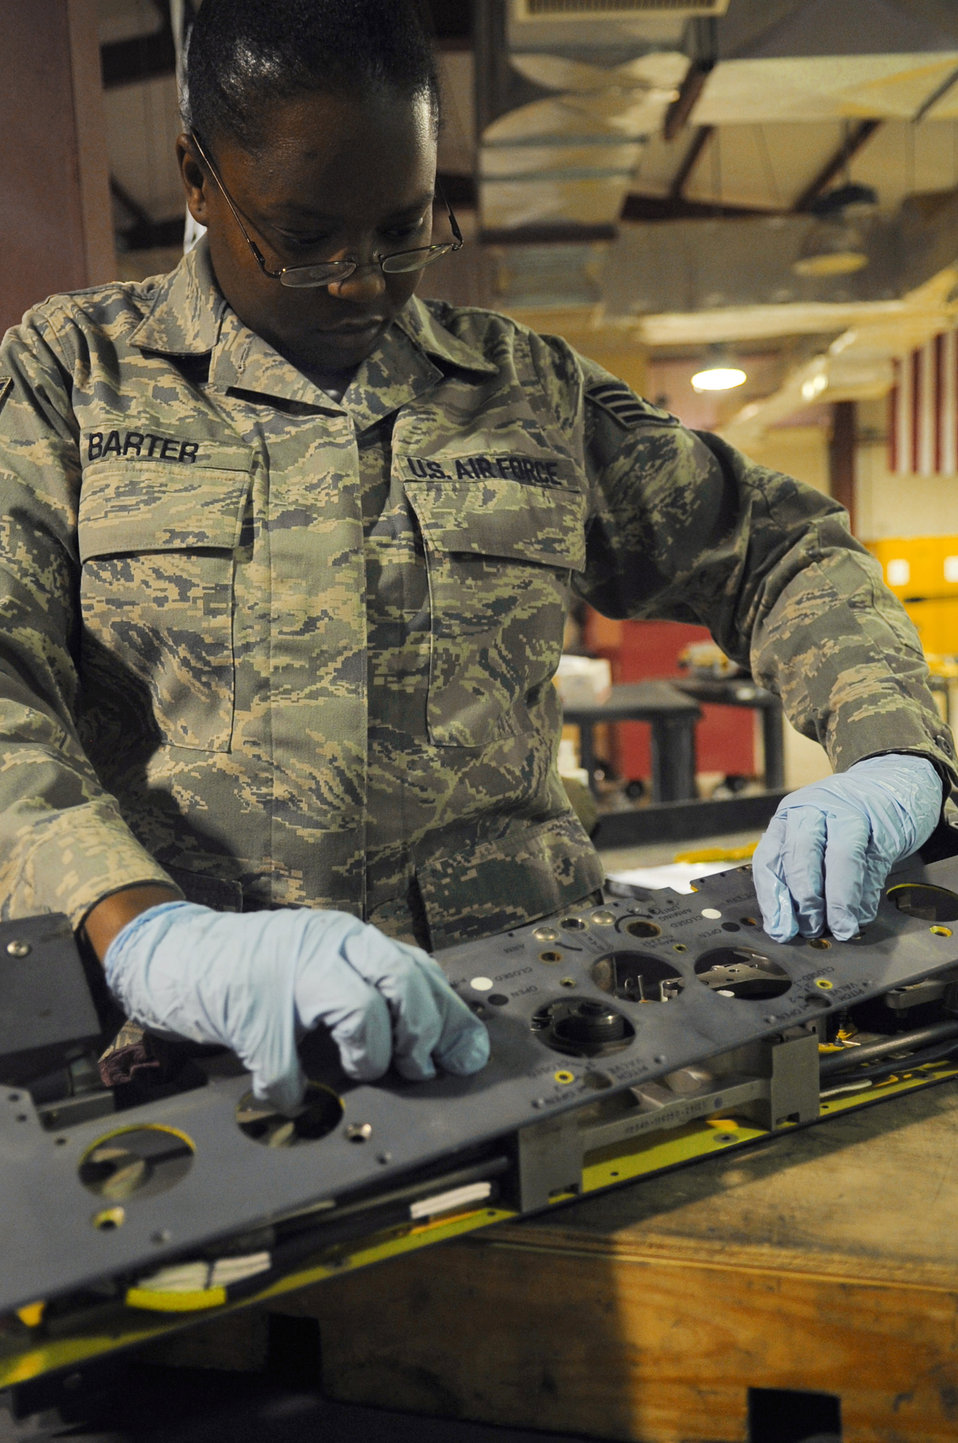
Weapons loaders arm jets for the fight

Staff Sgt. Kusan Barter inspects a piece of weapons release equipment for an F-16 Fighting Falcon June 29 at Joint Base Balad, Iraq. Sergeant Barter is a 332nd Expeditionary Aircraft Maintenance Squadron armament-systems craftsman, deployed from Spangdahlem Air Base, Germany, and is a native of Pensacola, Fla.